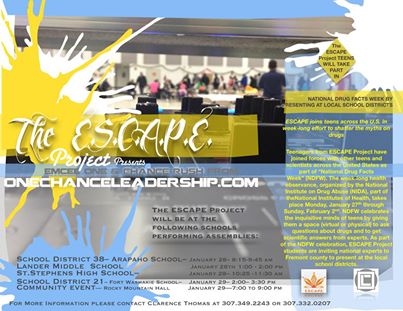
Drug facts week for ESCAPE Project in Wyoming